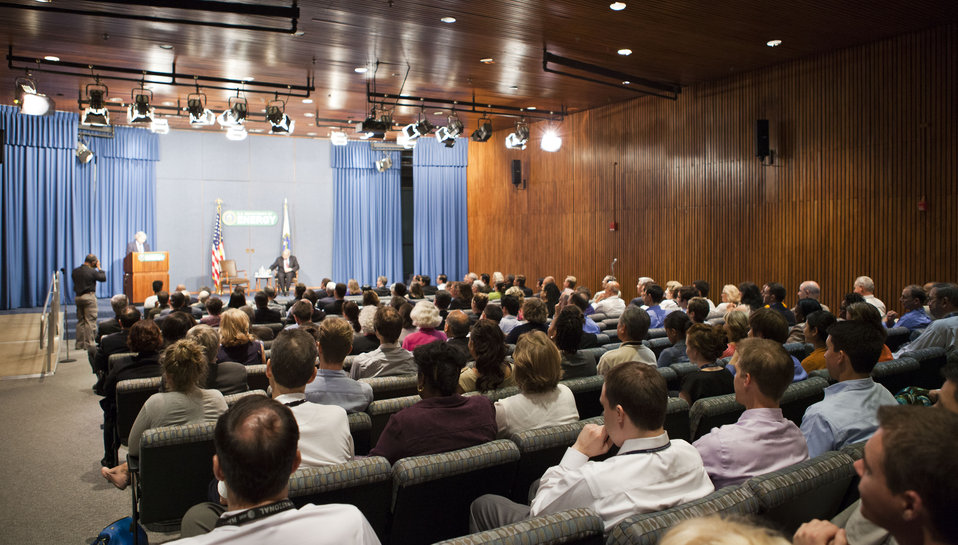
DOE Town Hall

On May 22, 2013, newly sworn-in Energy Secretary Dr. Ernest Moniz opened up a town hall forum. DOE employees were invited to attend, and submit questions to staff.